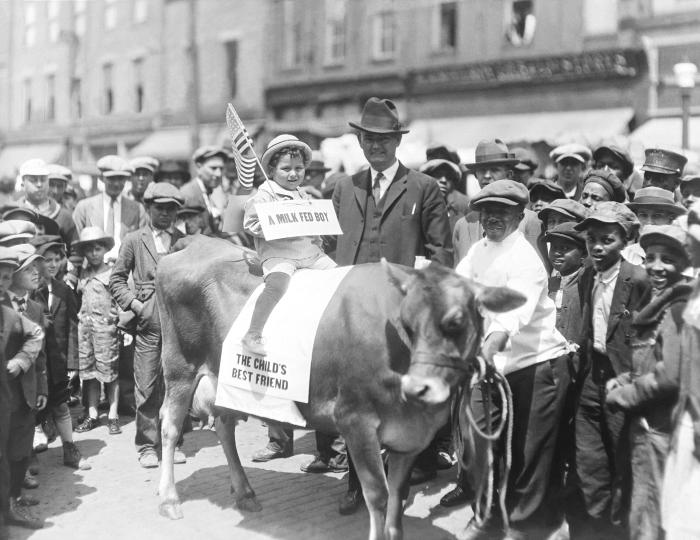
This historic photograph showed a gathering of children who had come together during an observance of 'Child Health Day'. The theme of the event focused on nutrition. The child seated on the cow was wearing a sign proclaiming him to be a 'milk-fed boy'. The cow sported a sign indicating it to be 'the child's best friend'. These messages emphasized the importance of milk to a child's diet, and exemplified the efforts of public health workers to disseminate these, as well as other messages promoting child healthcare. The setting was a town in the state of Kentucky. The original image was scanned from a glass lantern slide donated by the Minnesota Department of Health, and is one of a historical collection of documents and photographs devoted to observances of Child Health Day in the United States.